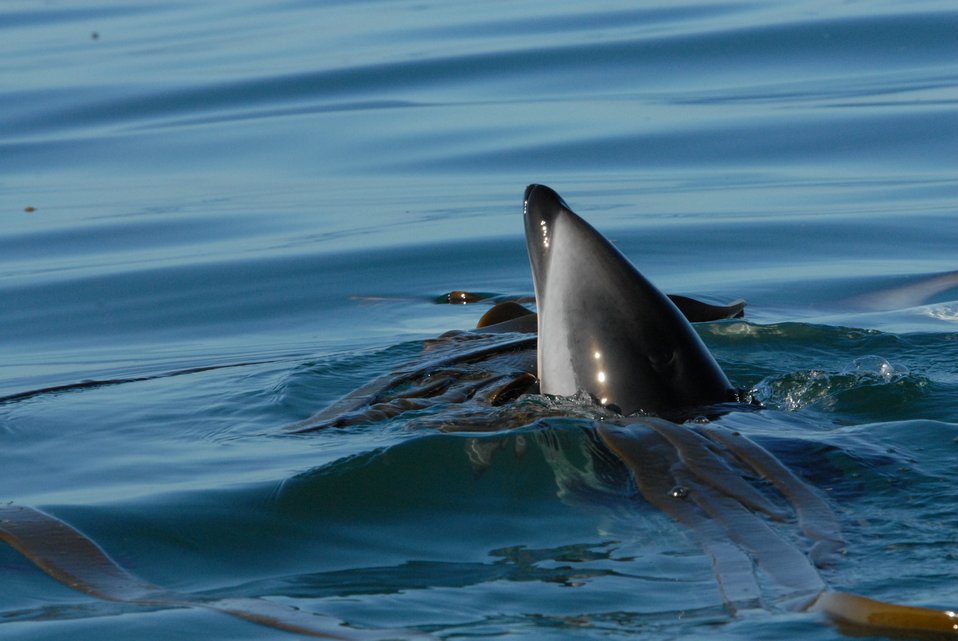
Dusky dolphin (Lagenorhynchus obscurus)